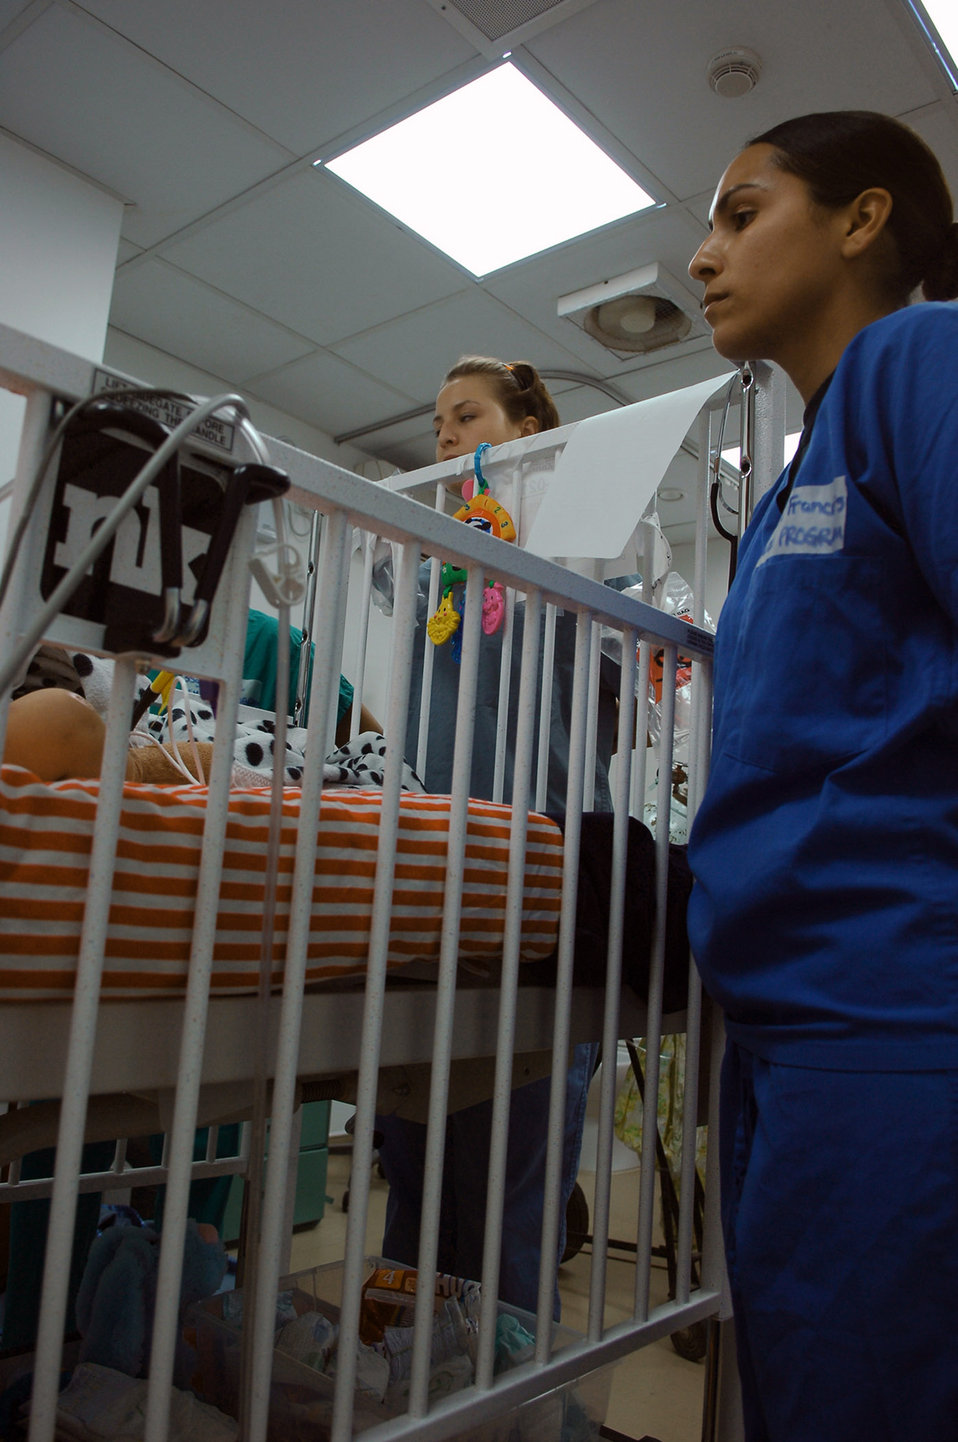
Airmen go from flight operations to the operations table

Staff Sgt. C.J. Cruz-Francois (right) and Senior Airman Nicole Vaughn look into the crib of an Iraqi toddler who suffered electrical burns after chewing through a power cord in his home May 7 at the Air Force Theater Hospital at Balad Air Base, Iraq. The Airmen were exposed to multiple facets of the hospital including the intensive care ward, medical logistics, the physical therapy clinic and laboratory. Sergeant Cruz-Francois is assigned to the 332nd Expeditionary Fighter Squadron, and Airman Vaughn is assigned to the 23rd Expeditionary Fighter Squadron. Both are deployed from Spangdahlem AB, Germany.